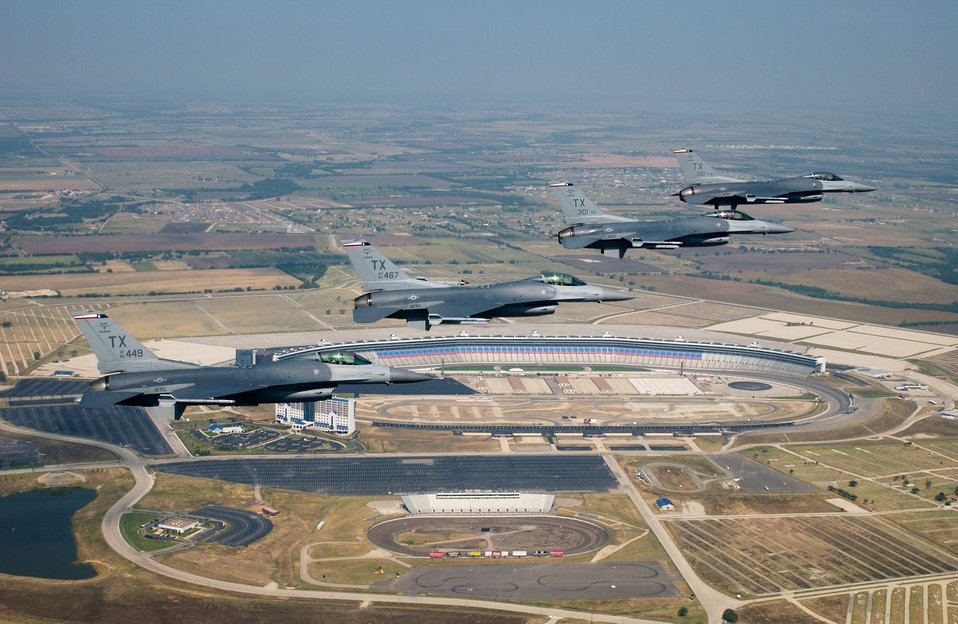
Racing over Texas

FORT WORTH, Texas -- Four F-16C Fighting Falcons from the 301st Fighter Wing, Naval Air Station/Joint Reserve Base, Carswell Air Base, Texas, fly in formation over the Texas Motor Speedway.